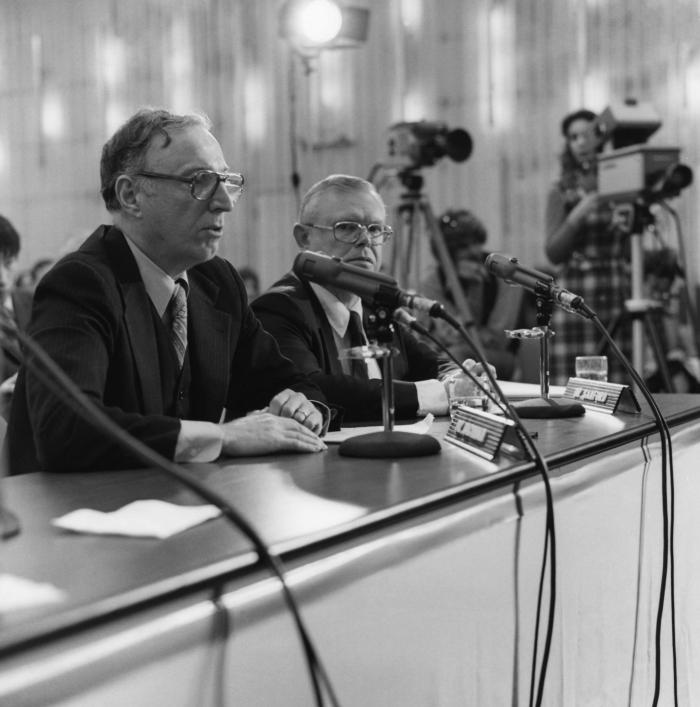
This November 9, 1977 photograph was taken during the Senate hearing on the Centers for Disease Control's handling of the Legionnaires' disease outbreak.